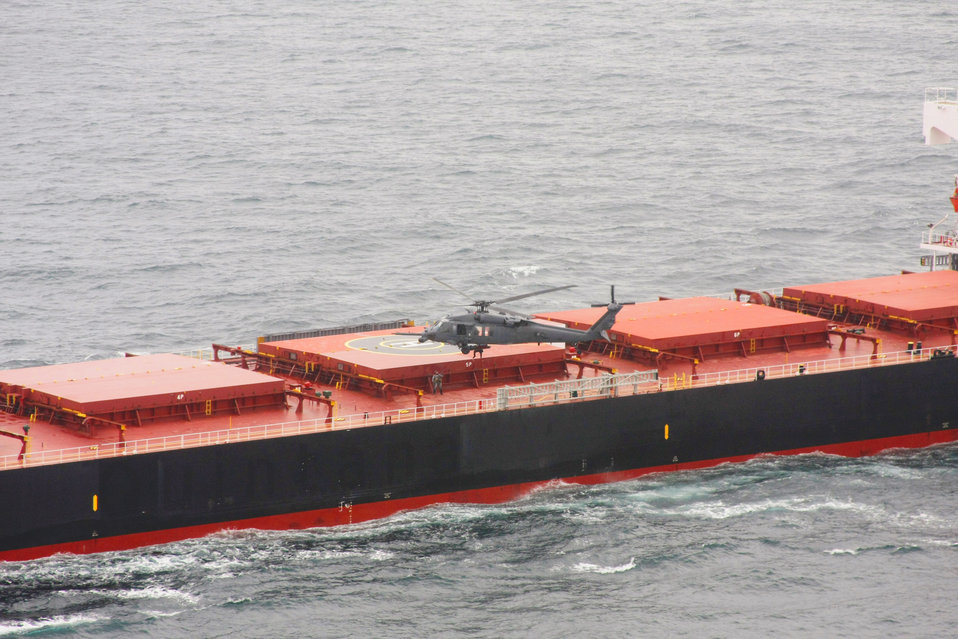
Crewmember stable after Airmen assist in rescue over Atlantic

A sailor from the cargo ship Pascha is hoisted aboard an HH-60G Pave Hawk helicopter June 26 on the Atlantic Ocean. The sailor was experiencing severe abdominal pain, requiring immediate medical evacuation. The HH-60G is from the 56th Rescue Squadron at Royal Air Force Lakenheath, England. Two additional U.S. Air Force aircraft, a KC-135 Stratotanker from the 100th Air Refueling Wing and a MC-130P Combat Shadow from the 352nd Special Operations Group, both from RAF Mildenhall, England, supported the operation for refueling and communication purposes. A Nimrod, search and rescue aircraft, from the United Kingdom also played a critical role in the operation, providing real-time communication and coordination between the ship and aircraft. The patient was delivered to an awaiting ambulance in Shannon, Ireland, and is in stable condition.